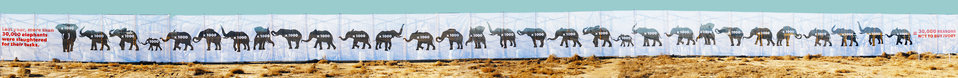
•Global demand for ivory continues to rise. And this demand is fueling a slaughter of horrific proportions in Africa.